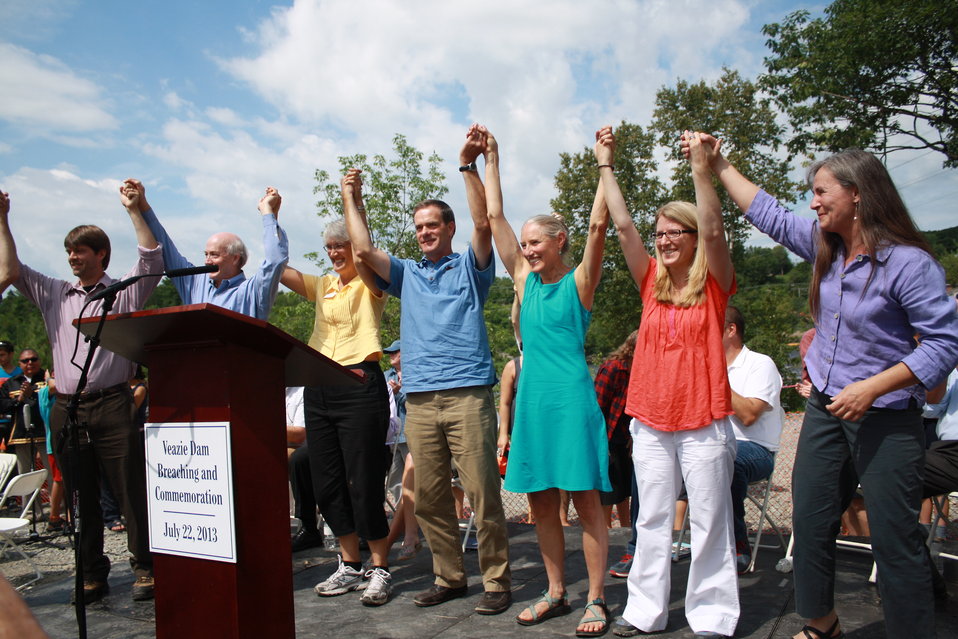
Veazie Dam Removal

Brian Graber, Acting Senior Director for River Restoration, American Rivers
Andy Goode, Vice President of U.S. Programs for the Atlantic Salmon Federation
Lisa Pohlman, Executive Director for Natural Resources Council of Maine
Tom Rumpf, Acting Director of The Nature Conservancy
Sally Stockwell, Director of Conservation for Maine Audubon
Elizabeth Maclin, Vice President for Eastern Conservation, Trout Unlimited
Laura Rose Day, Executive Director of the Penobscot River Restoration Trust